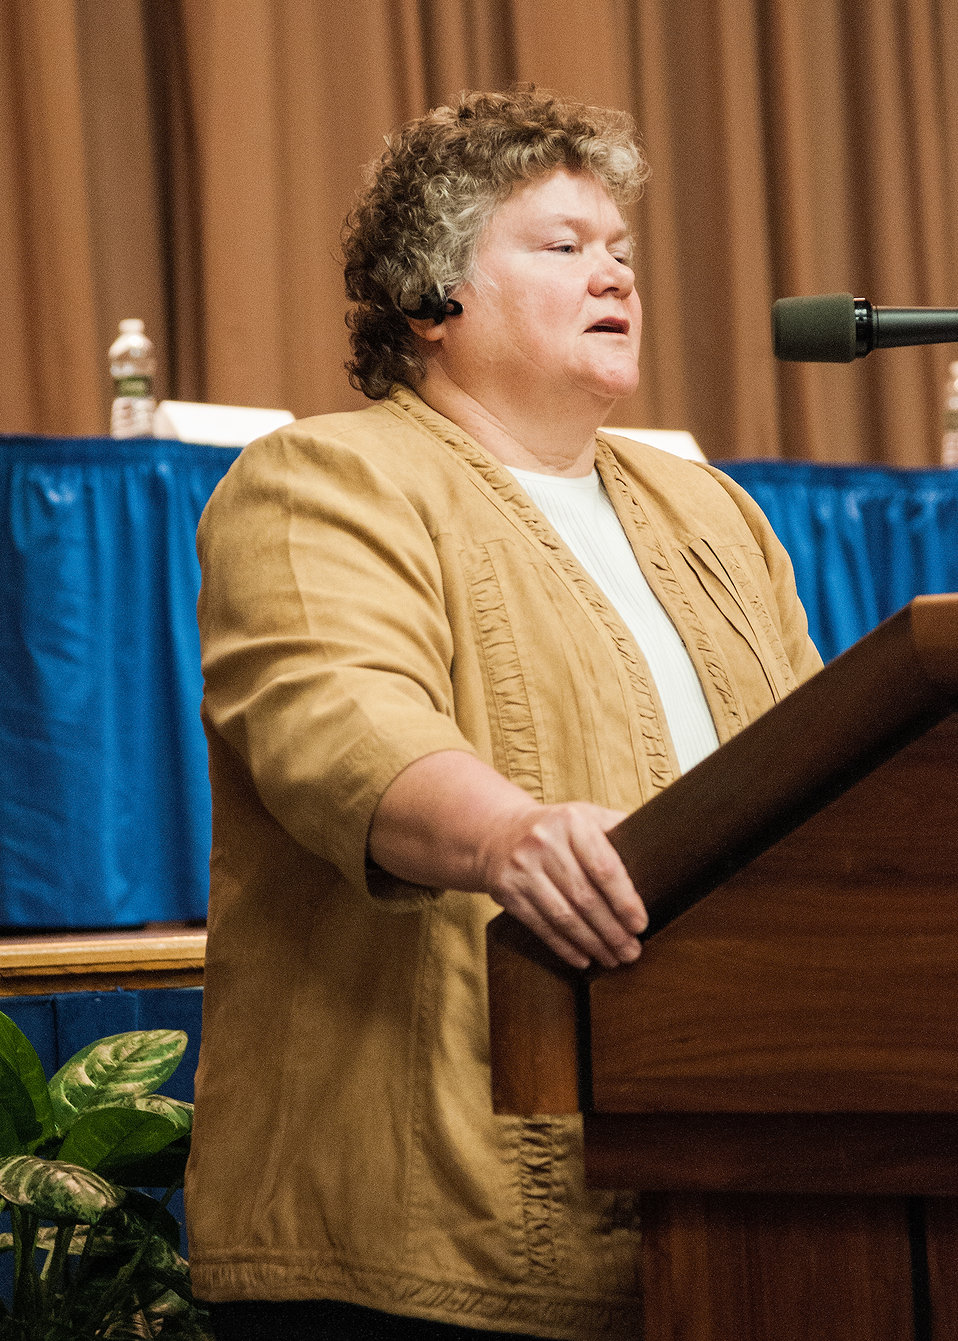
U.S. Department of Agriculture (USDA) Office of the Chief Information Officer (OCIO) Sue Bussells gives the closing remarks at the USDA OCIO celebration of National Women’s History Month at the USDA Jefferson Auditorium in Washington, D.C. on Thursday, Mar. 14, 2013. The OCIO is celebrating Women’s National History Month to commemorate women’s struggles, celebrate centuries of progress, and reaffirm women’s steadfast commitment to the rights, security and dignity of women in America and around the world. The theme of this year’s celebration was, “Recognizing American Women’s Outstanding Contributions to the Field of Science, Technology, Engineering and Mathematics,” commonly referred to as STEM.